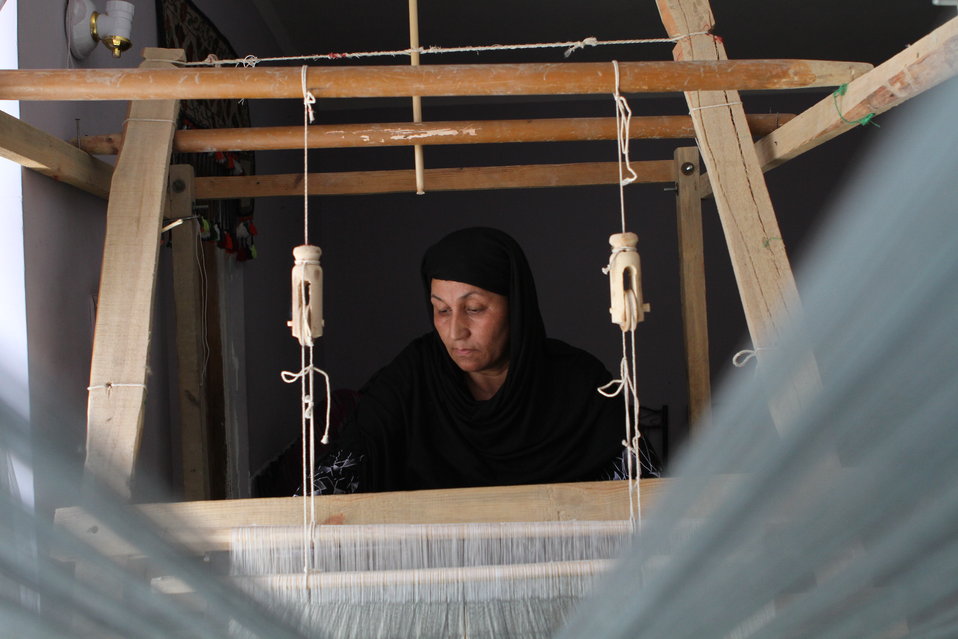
Silk Production

Household silk production is a traditional activity in northern Afghanistan where silk is used to make carpets and textiles. USAID programs promote silk worm cultivation and the weaving of fine silk cloth. Many of the jobs these new industries create enable women to earn a living in the home to support their family. USAID’s IDEA-NEW project is training over 400 women in this craft.